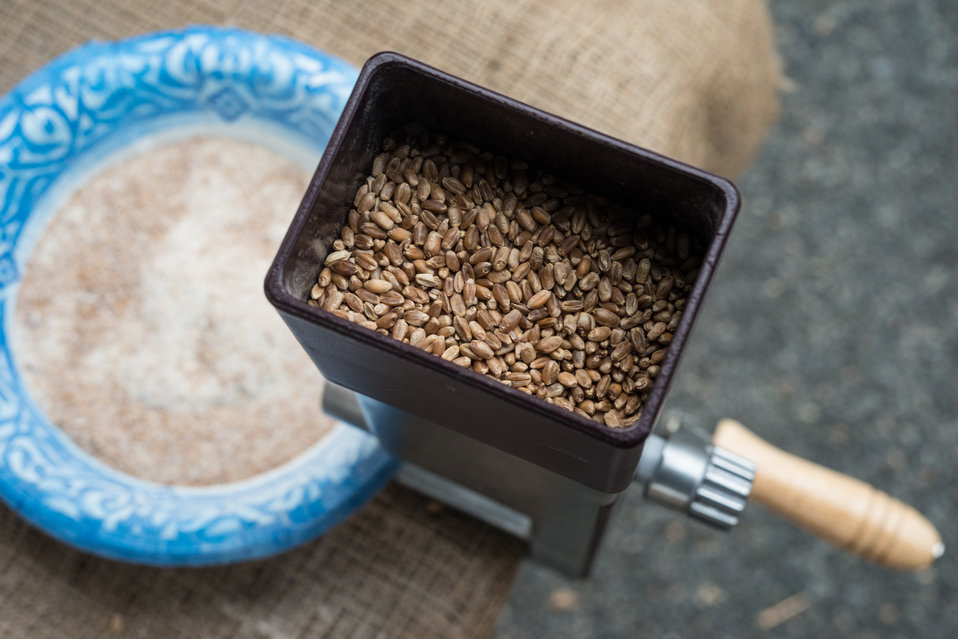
Wheat grains before and after being ground at the 18th U.S. Department of Agriculture (USDA) summer farmers market final outdoor market of the season at the USDA Whitten Building east parking lot in Washington, DC, on Friday, November 22, 2013.